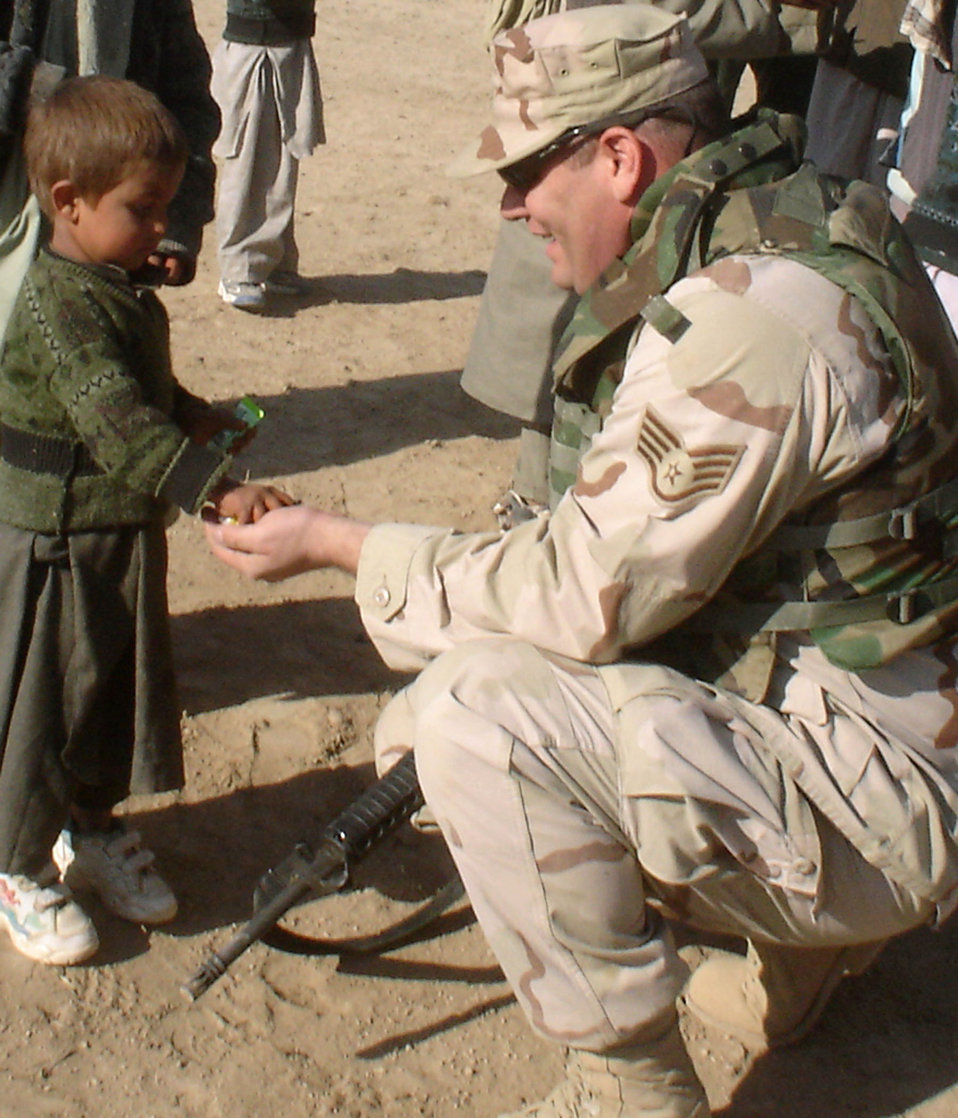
Airmen revive adopt-a-village program

KHAROTI, Afghanistan -- A young villager shares the candy he just received with Staff Sgt. Michael McLaughlin, a 455th Expeditionary Civil Engineer Flight engineering assistant deployed from Dover Air Force Base, Del. The Airman helped distribute clothes, shoes, toys and school supplies during a recent adopt-a-village visit.